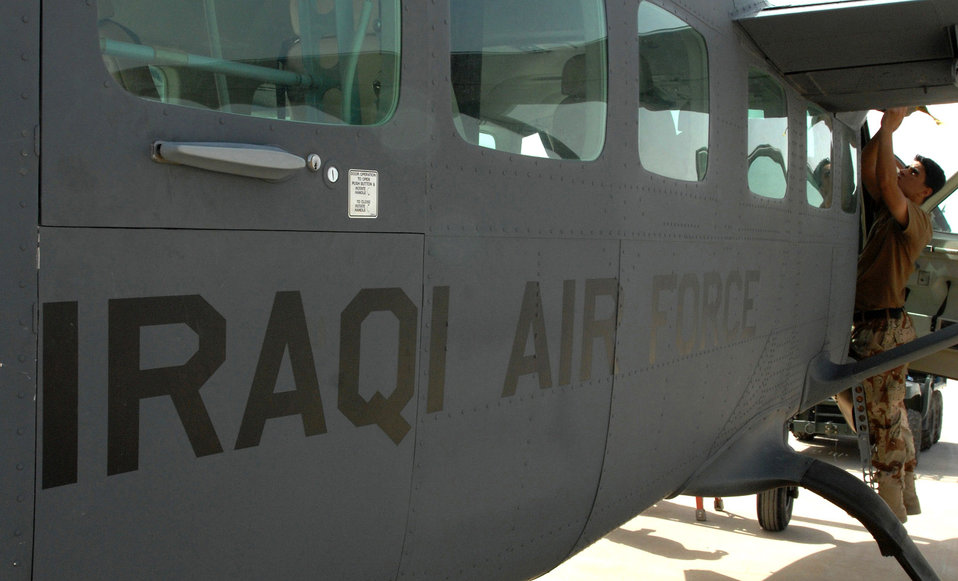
Iraqi airmen keep fleet soaring

An Iraqi airman conducts maintenance on a Cessna June 7 at Kirkuk Air Base, Iraq. While Iraqi air force pilots continue flying sorties to aid stability in their nation, Iraqi maintainers on the ground have recently achieved important benchmarks to keep their fleet in the air. Airmen with the Iraqi air forces' 3rd Squadron took over a wide variety of maintenance duties on the unit's Cessna intelligence, surveillance and reconnaissance fleet, a task formerly performed by U.S. contractors.